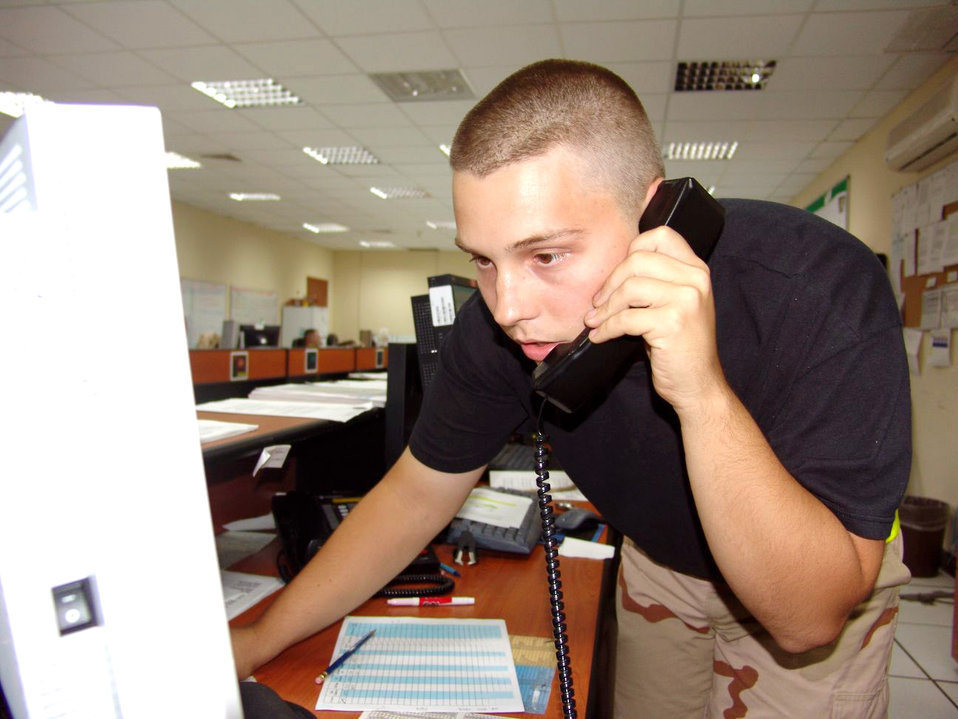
Airmen keep mission rolling

SOUTHWEST ASIA -- Senior Airman Robert Cotton coordinates with work centers on an aircraft that needs unloading. He is an inbound controller with the 386th Expeditionary Logistics Readiness Squadron's air terminal operations center at a forward-deployed location.